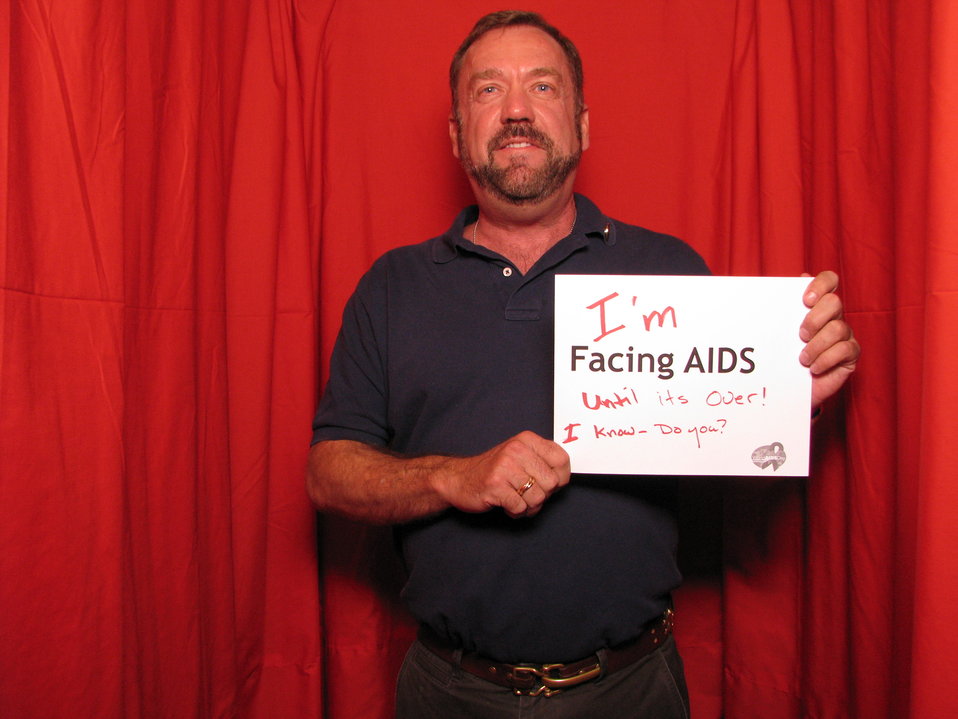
I'm FACING AIDS until it's over! I know -- do you?

From the AIDS.gov photo booth at the U.S. Conference on AIDS, September 2010 (Orlando, FL).